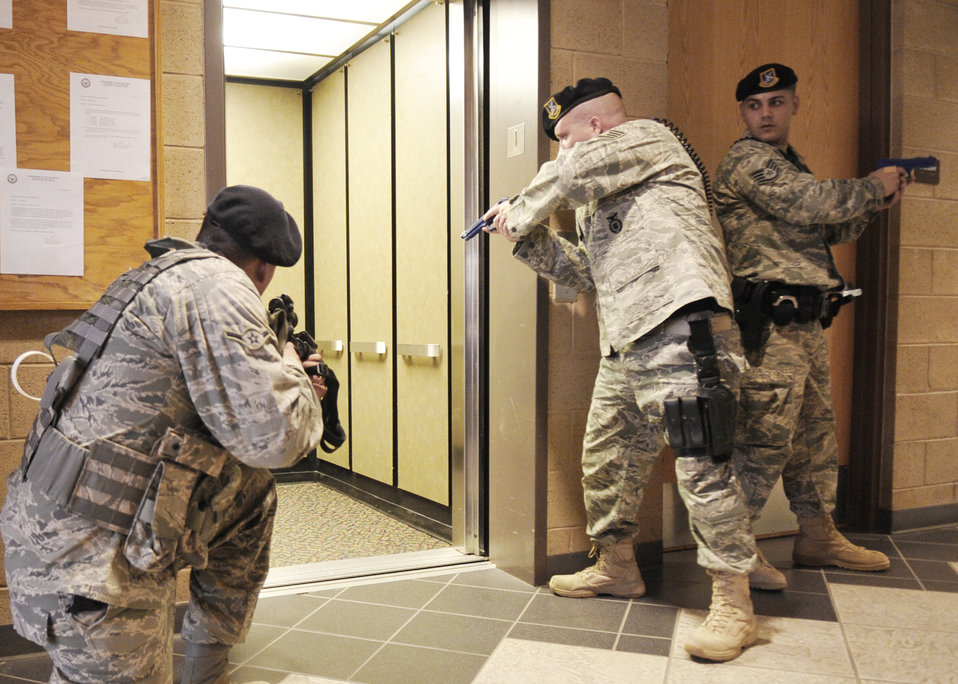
Holloman Airmen train for worst in active shooter exercise

Airman Pedro Escobar, Staff Sgt. Craig Ames and Staff Sgt. Michael Morris conduct a building sweep at the Domenici Fitness and Sports Center March 11, 2010, at Holloman Air Force Base, N.M. Some of the objectives in the exercise were to address communications, response procedures and command and control between on-site personnel and base command and control. Airman Escobar and Sergeants Ames and Morris are assigned to the 49th Security Forces Squadron.